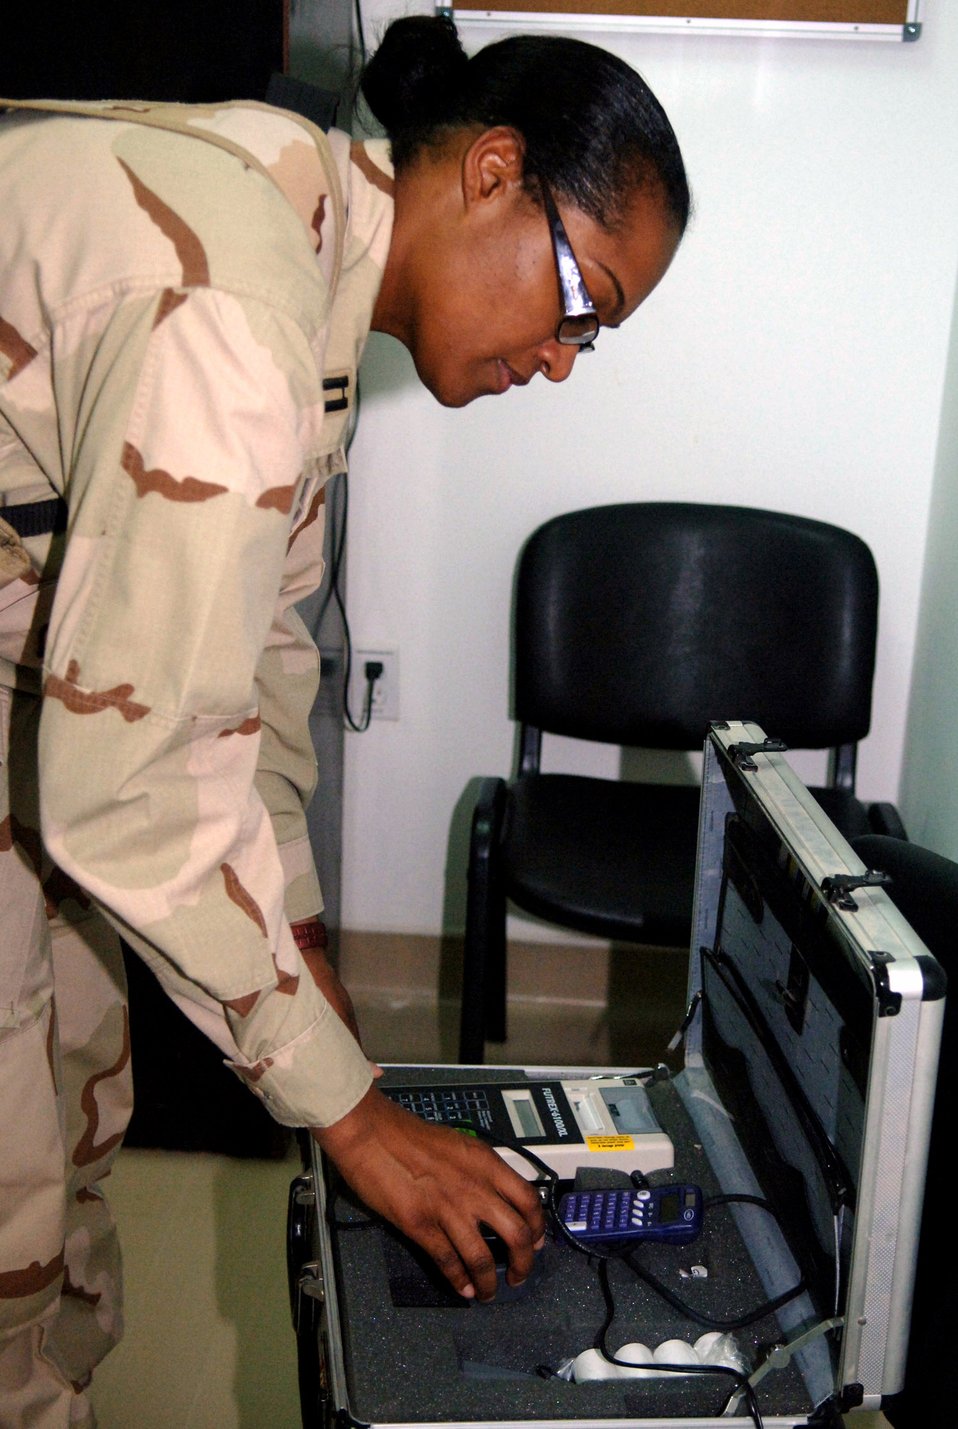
Nutrition flight helps keep servicemembers fit to fight

Capt. Saunya Bright, a 332nd Expeditionary Medical Support Squadron nutrition flight dietician, prepares the Futurex 6100/XL before performing a body composition analysis. The Futurex is used to measure body-mass index, body-fat percentage and total amount of water in the body. Captain Bright is deployed from Lackland Air Force Base, Texas.